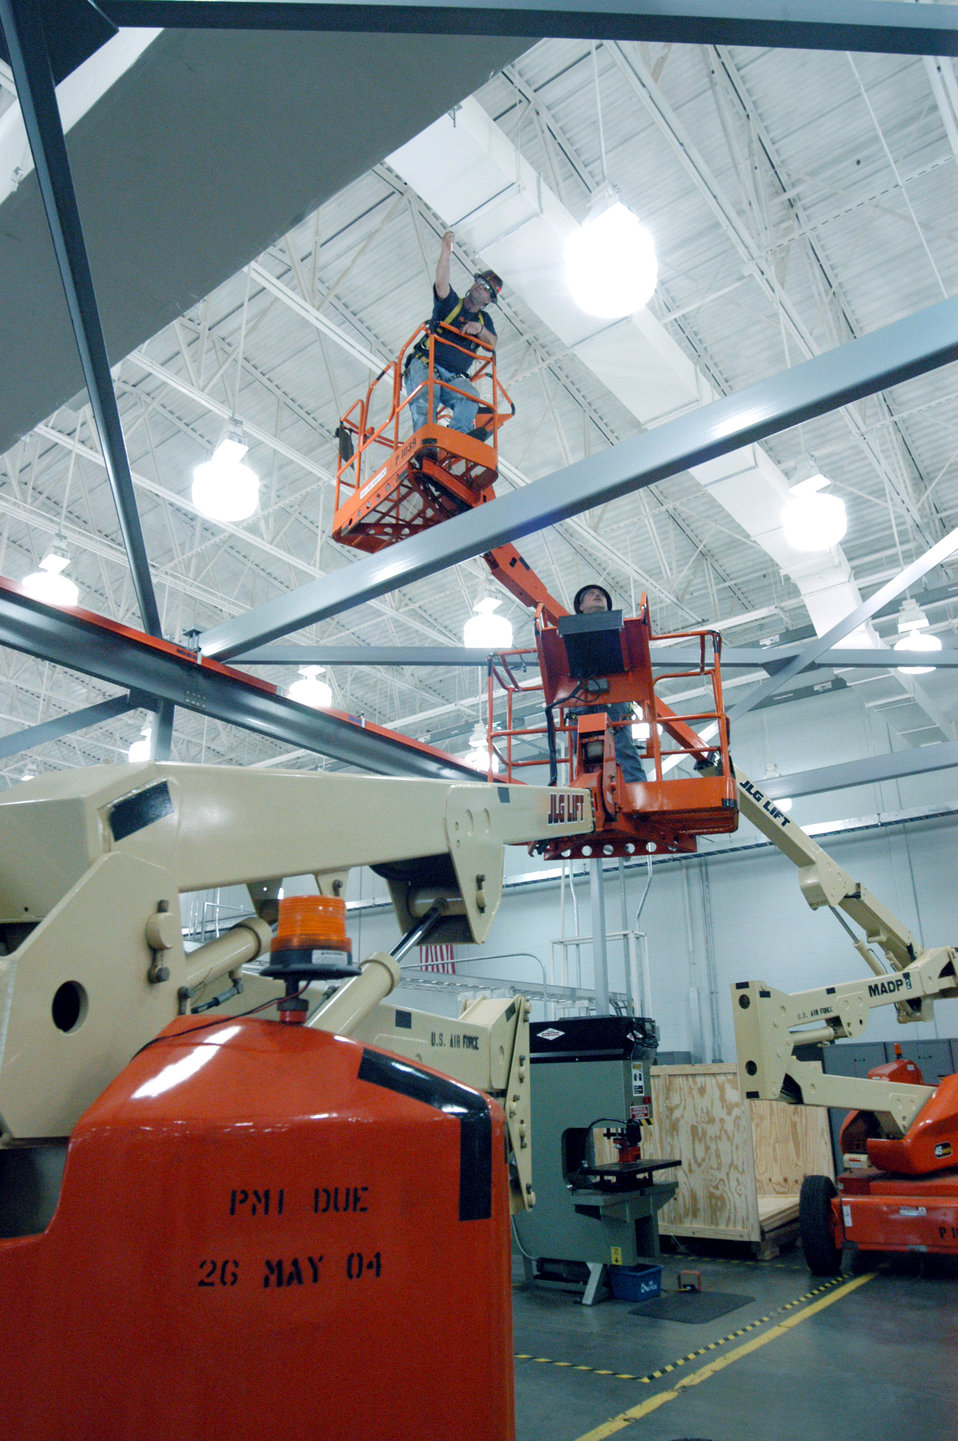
ROBINS AIR FORCE BASE, Ga. -- Ken Zwitch (left) and Buck Roland use lifts to check out a building's beams. Both men are millwrights, or metal structure mechanics, here.